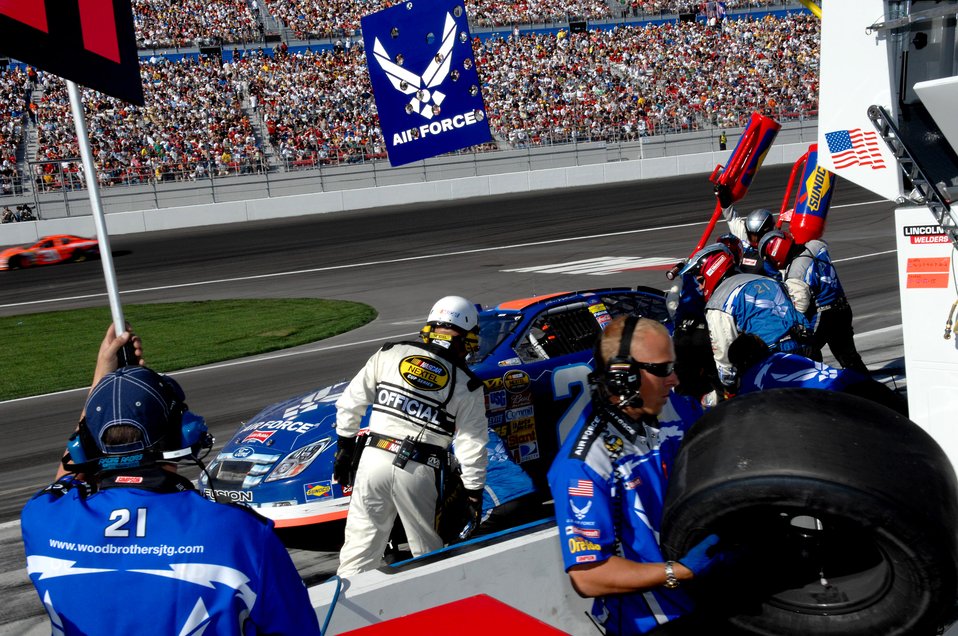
NASCAR Nextel Cup UAW Daimler-Chrysler

The pit crew from the Air Force #21 car get to work on a four tire change pit stop during the UAW Daimler-Chrysler 400 March 11 at the Las Vegas Motor Speedway.